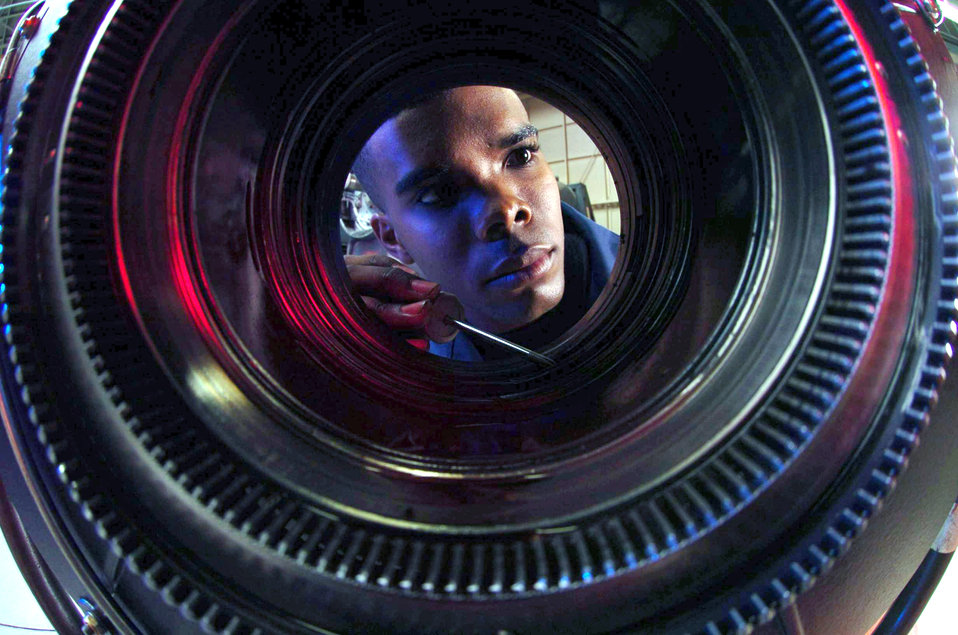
An inside look

YOKOTA AIR BASE, Japan -- Airman 1st Class Michael Bryant inspects the inside of a valve housing assembly from a C-130 Hercules engine. He is a mechanic assigned to the 374th Maintenance Squadron's T56 engine regional repair center here. The Airmen from the center remove, inspect, repair, modify and install propeller assemblies and components on C-130s from throughout the Pacific region.